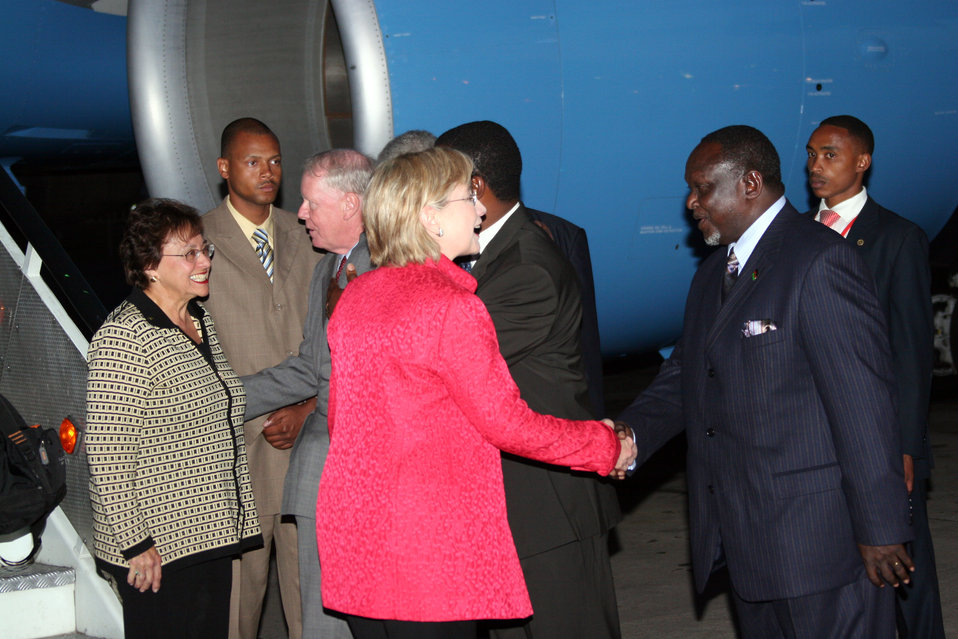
Secretary Clinton Arrives in Nairobi, Kenya

U.S. Secretary of State Hillary Rodham Clinton is greeted by Kenyan Ambassador to the U.S. Peter Ogego during her arrival at Jomo Kenyatta International Airport in Nairobi, Kenya August 4, 2009.